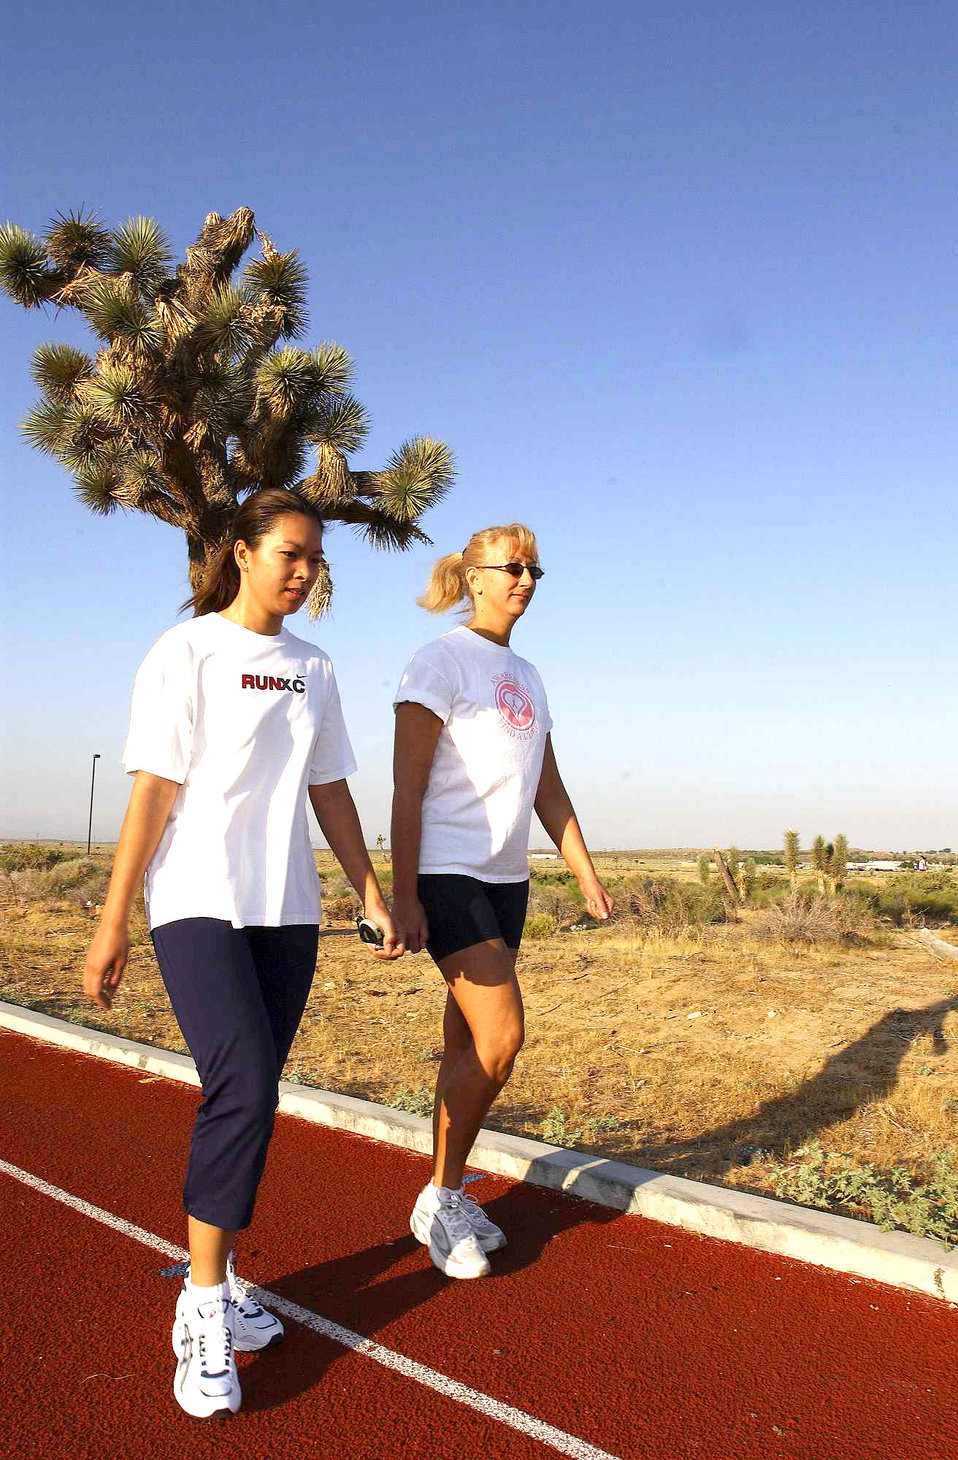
Edwards' warriors walk for cancer cure

EDWARDS AIR FORCE BASE, Calif. -- Tech Sgt. Chonthicha Lane (left) and Michelle Chebahtah train before participating in a walk to support breast cancer research July 9 and 10. Sergeant Lane is the noncommissioned officer in charge of the 412th Maintenance Operations Squadron here, and Ms. Chebahtah is the 412th Aircraft Maintenance Squadron training manager.